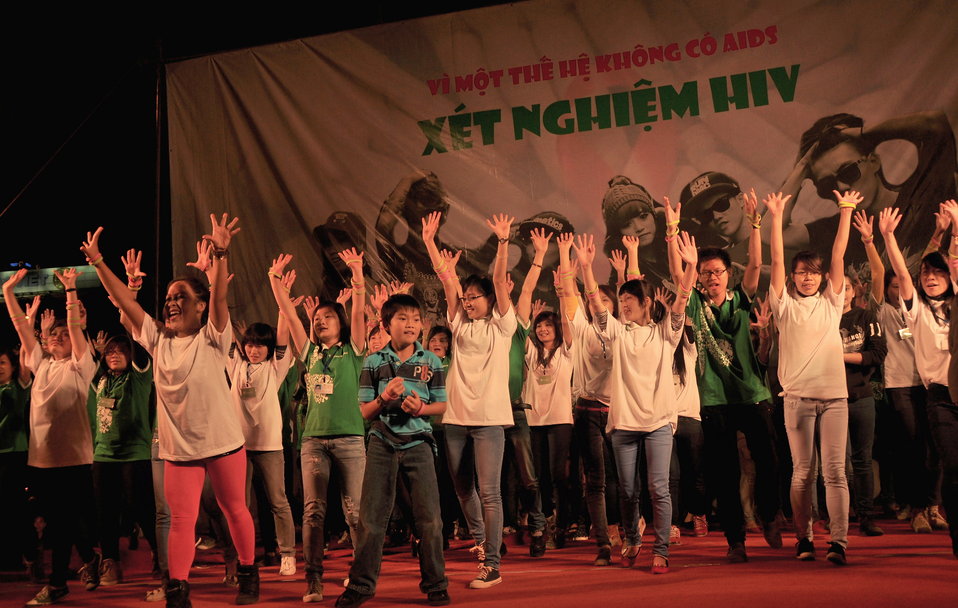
USAID and PEPFAR supports an outdoor concert to promote Vietnam's national action month for HIV

Hanoi, December 18, 2012.